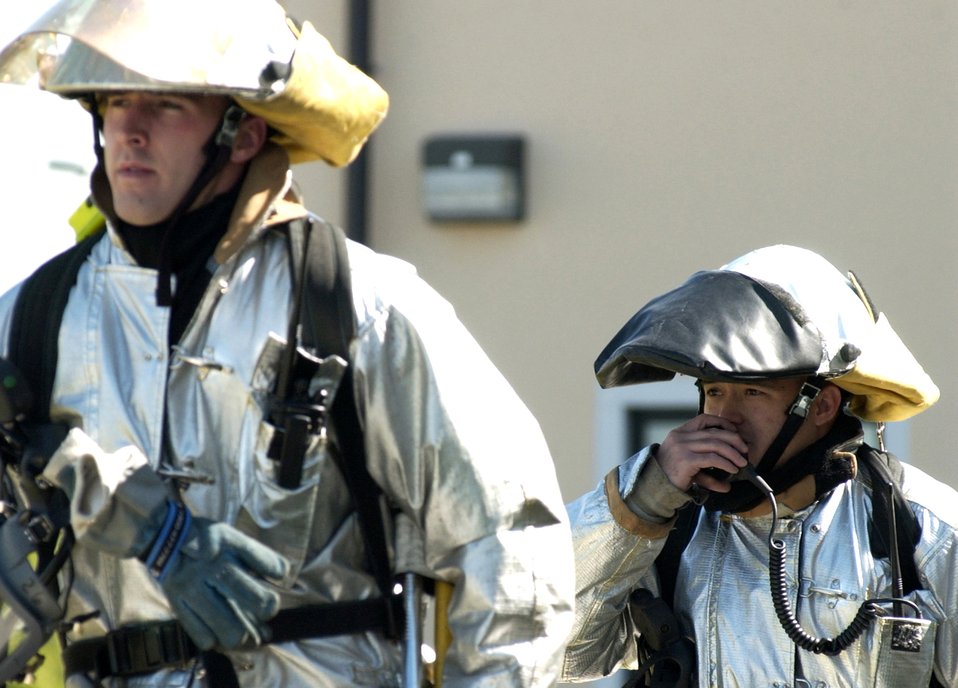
Exercise response

Senior Airman Jay Christiansen (left) and Staff Sgt. Keith Manibusan prepare to enter a building during a local Salty Nation exercise at Aviano AB, Italy on Tuesday, June 6, 2006. The firefighters are with the 31st Fighter Wing.